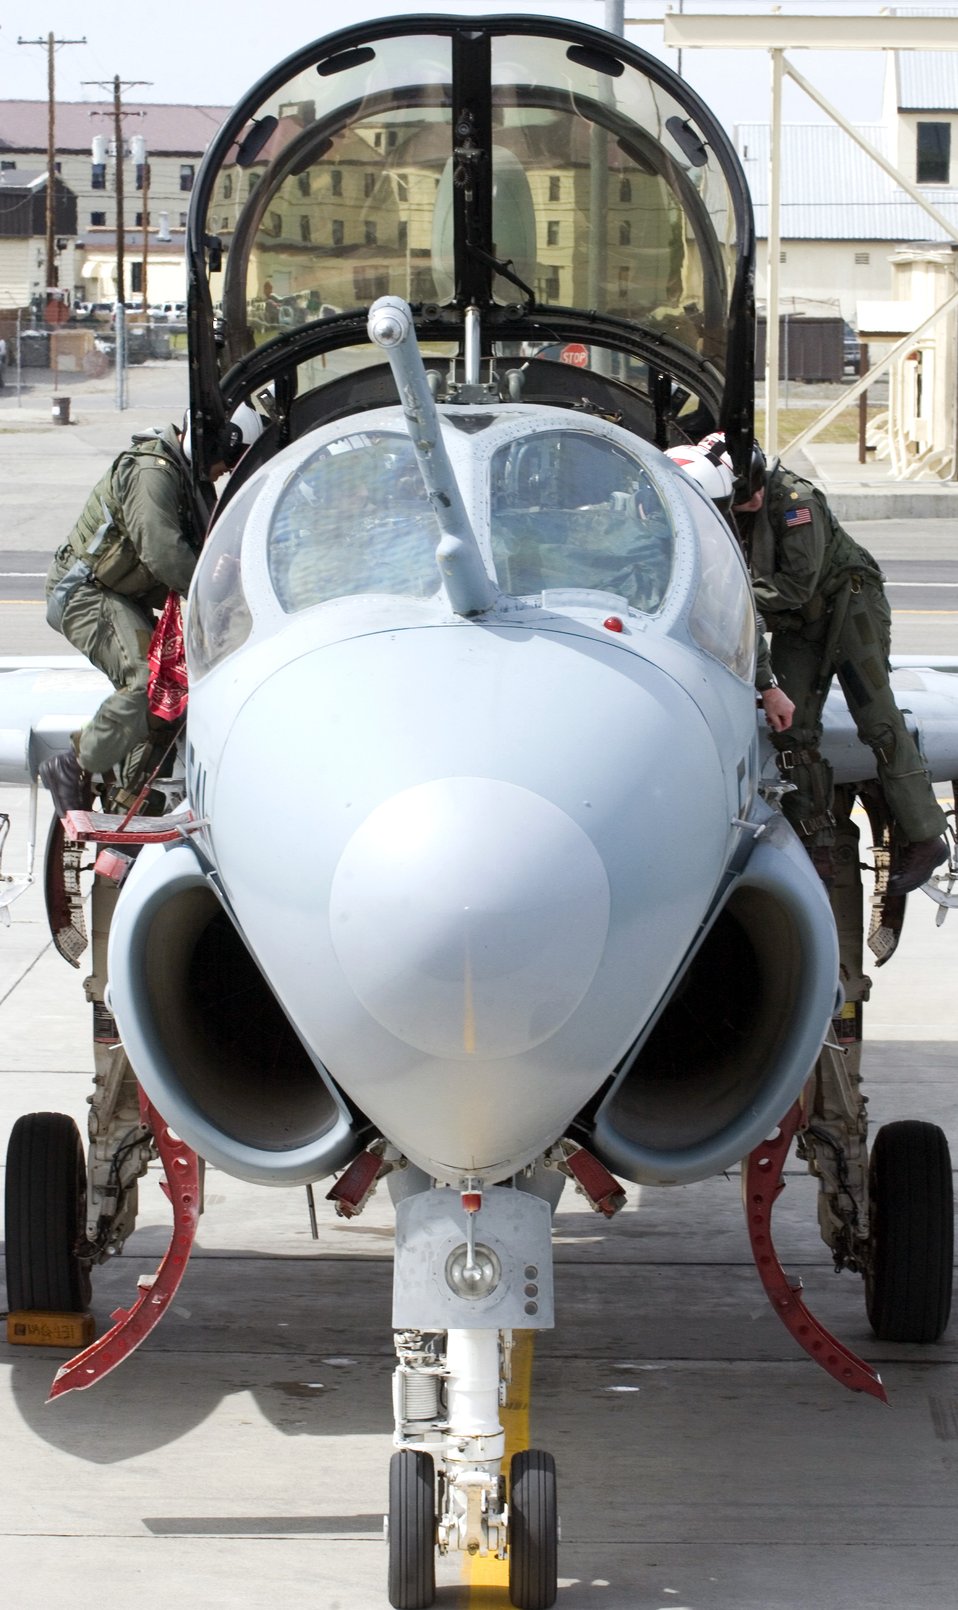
Joint Prowler team jams at Northern Edge 2006

A joint aircrew, comprising an Air Force and three Navy aviators, deplanes at Elmendorf Air Force Base, Alaska, after completing a Northern Edge 2006 mission on Tuesday, June 6. Their Navy EA-6B Prowler provides radar jamming and command and control for strike missions. Mixing aircrews during exercises like Northern Edge fosters increased interservice operability in a joint warfighting environment.